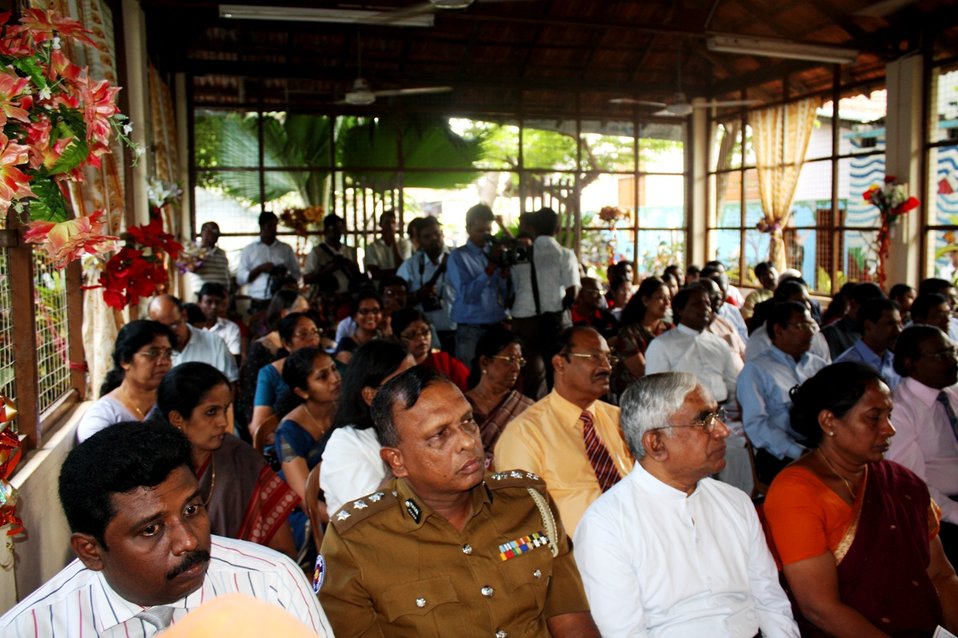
Audience Members Listen to Ambassador Butenis' Remarks

Members of the audience listen as U.S. Ambassador to Sri Lanka and Maldives Patricia A. Butenis delivers remarks at the opening of the American Corner Jaffna in Colombo, Sri Lanka, on January 24, 2011.